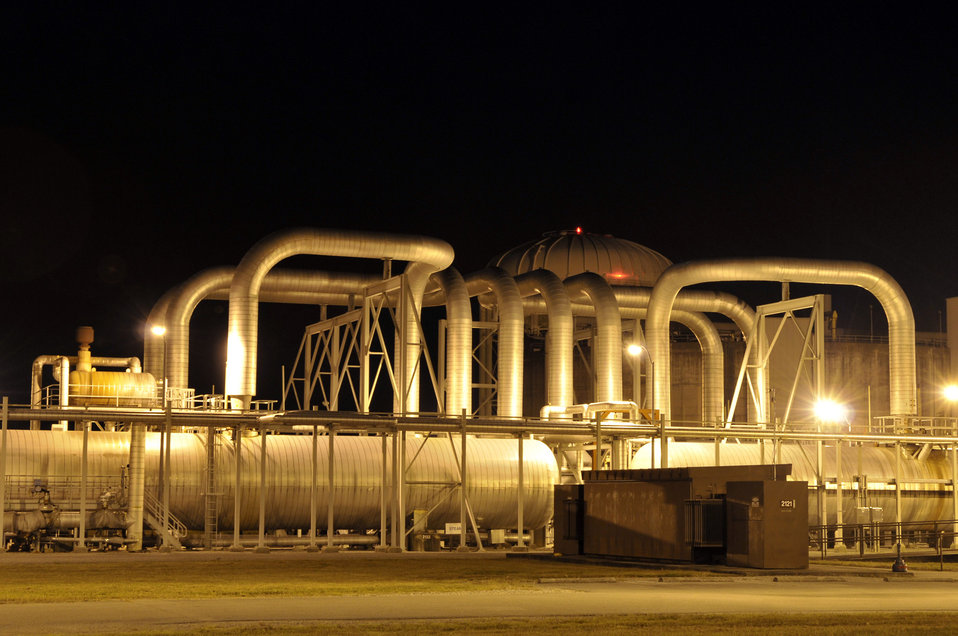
AEDC

The large rocket test facility uses ?Night Ops,